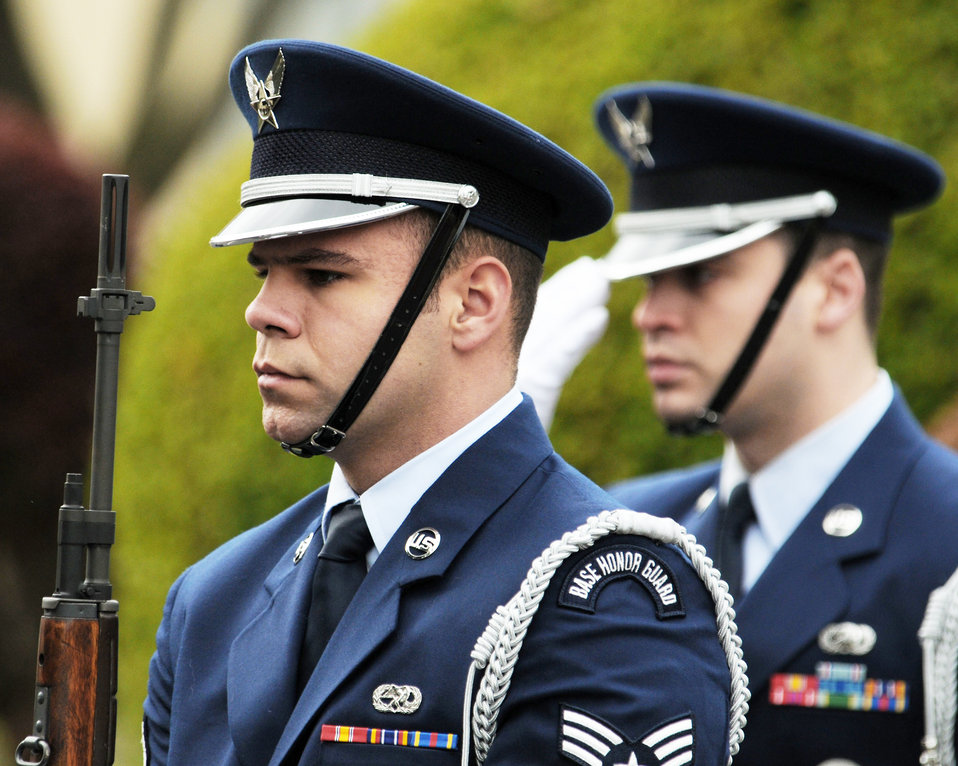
Solemn respect

Yokota Air Base Honor Guard members participate in one of two Veterans Day ceremonies Nov. 11, 2008, held at Yokota Air Base, Japan. Yokota's honor guard provided a five-gun salute during the ceremony.